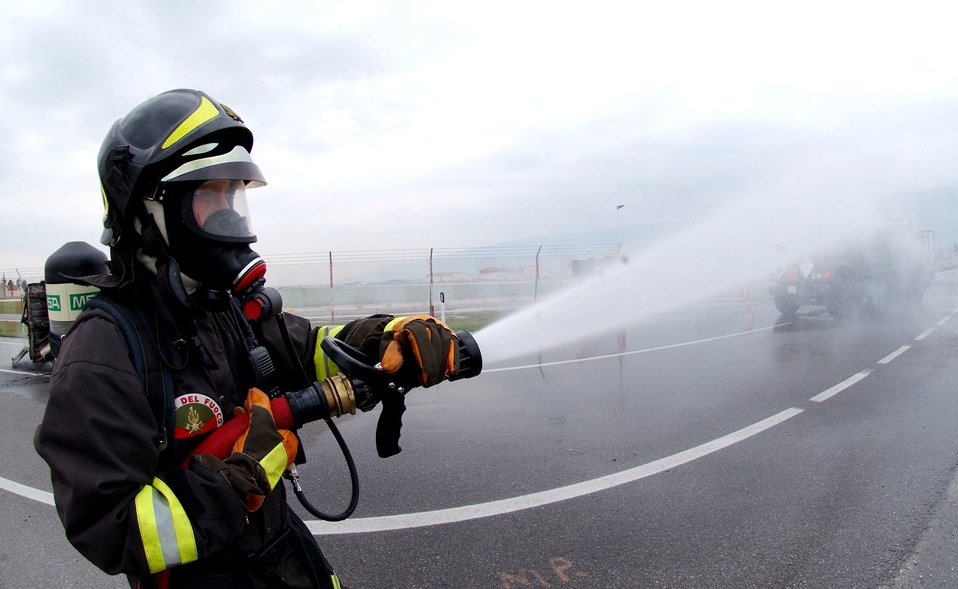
Joint training develops seamless response

A firefighter from the Vigili del Fuoco (Italian Fire Department) participates in an American-Italian exercise on Thursday, May 4, 2006. Responders from various Italian fire and police departments and medical facilities joined those from the 31st Fighter Wing fire department, hospital and security forces at Aviano Air Base, Italy, for a mass accident exercise. The purpose of the exercise is to develop a seamless response capability between Italian and American emergency professionals.